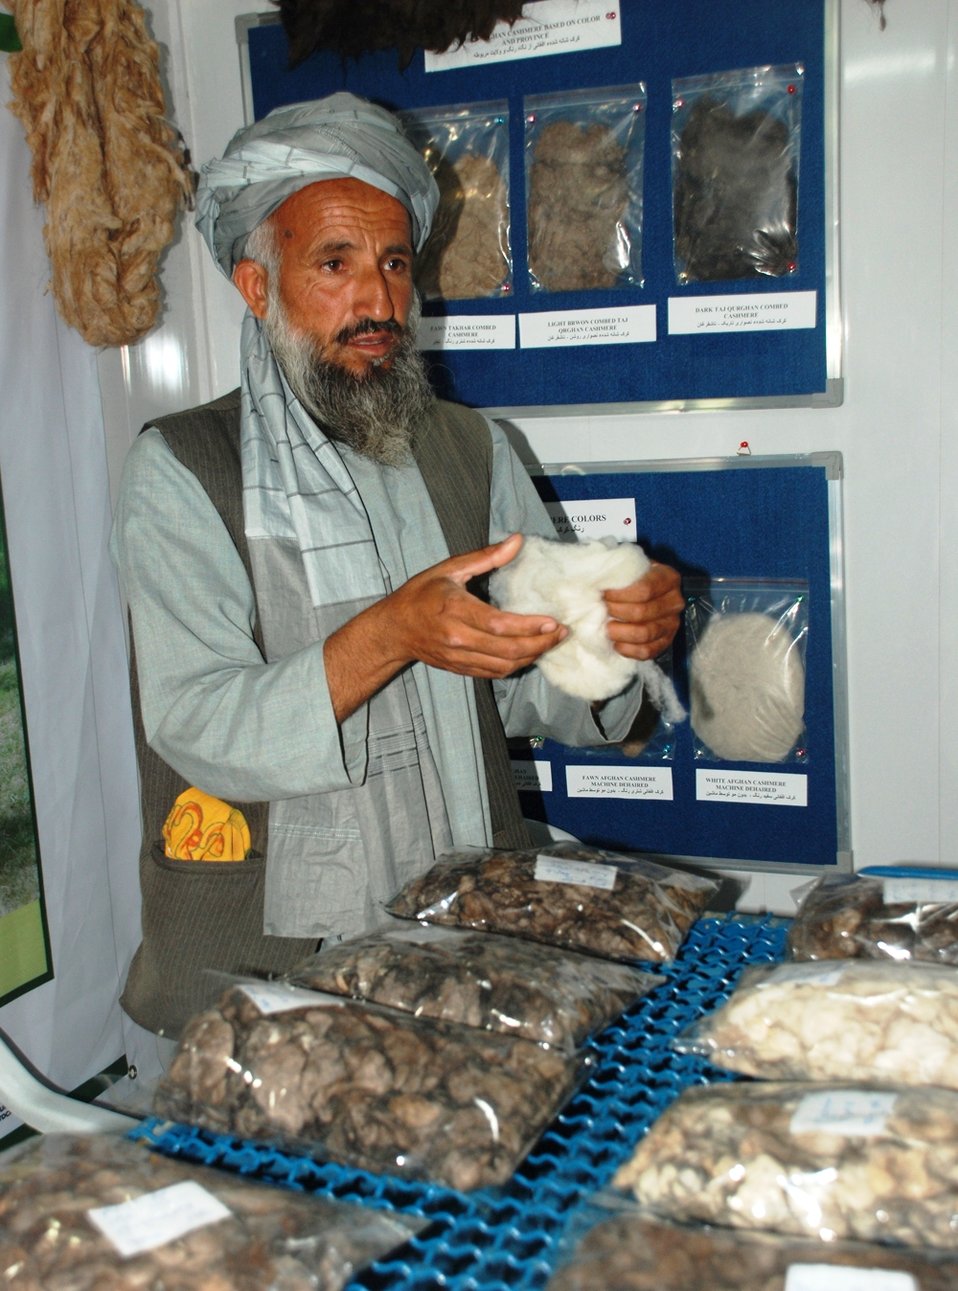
ASAP